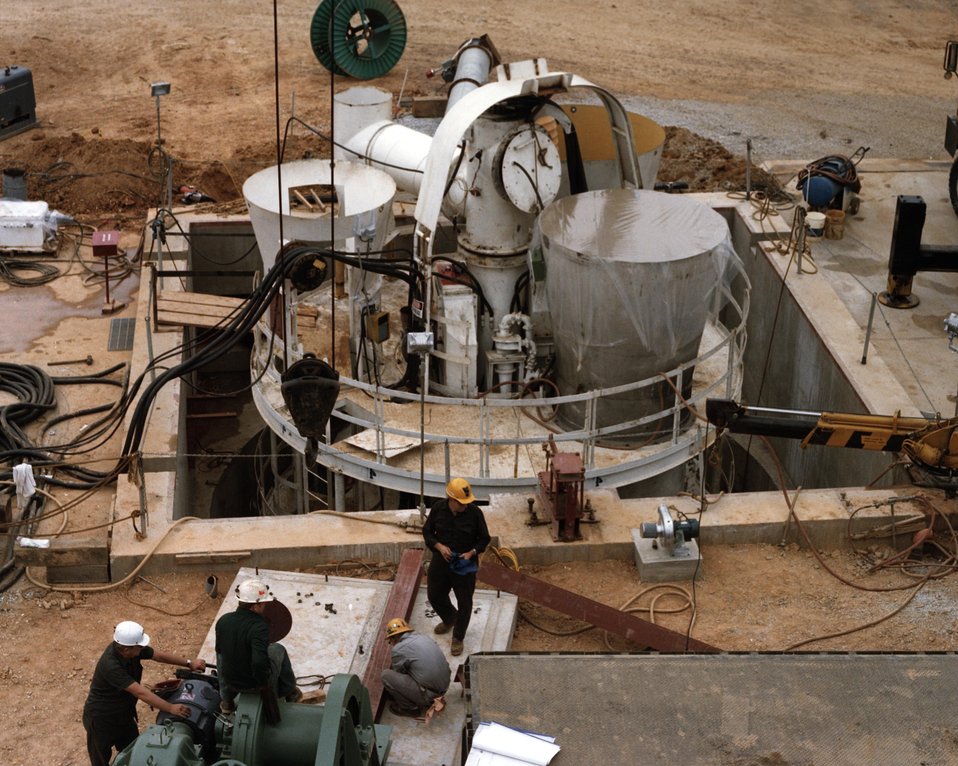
BLIND SHAFT BORER IN THE 47-FOOT DEEP COLLAR.

THE BLIND SHAFT BORER IS A NEW CONCEPT FOR BORING VERTICAL COLE MINE SHAFTS. THE BORER MACHINE IS UNIQUE AS IT IS THE ONLY ONE OF ITS TYPE IN THE WORLD, AND IS EXPECTED TO SIGNIFICANTLY REDUCE THE TIME REQUIRED TO DEVELOP NEW COAL MINES. THE MACHINE IS OVER 24 FEET IN DIAMETER, NEARLY 60 FEET HIGH, WEIGHS 350 TONS, AND CAN BORE 40 FEET PER 24-HOUR DAY. THE TOTAL SYSTEM INCORPORATES CONVENTIONAL HOISTING AND CONCRETE LINING EQUIPMENT. THE INITIAL FIELD TRAIL IS AT U.S. STEELS'S OAK GROVE MINE, AND TESTING STARTED IN EARLY DECEMBER AND WILL CONTINUE INTO THE SPRING OF 1979.